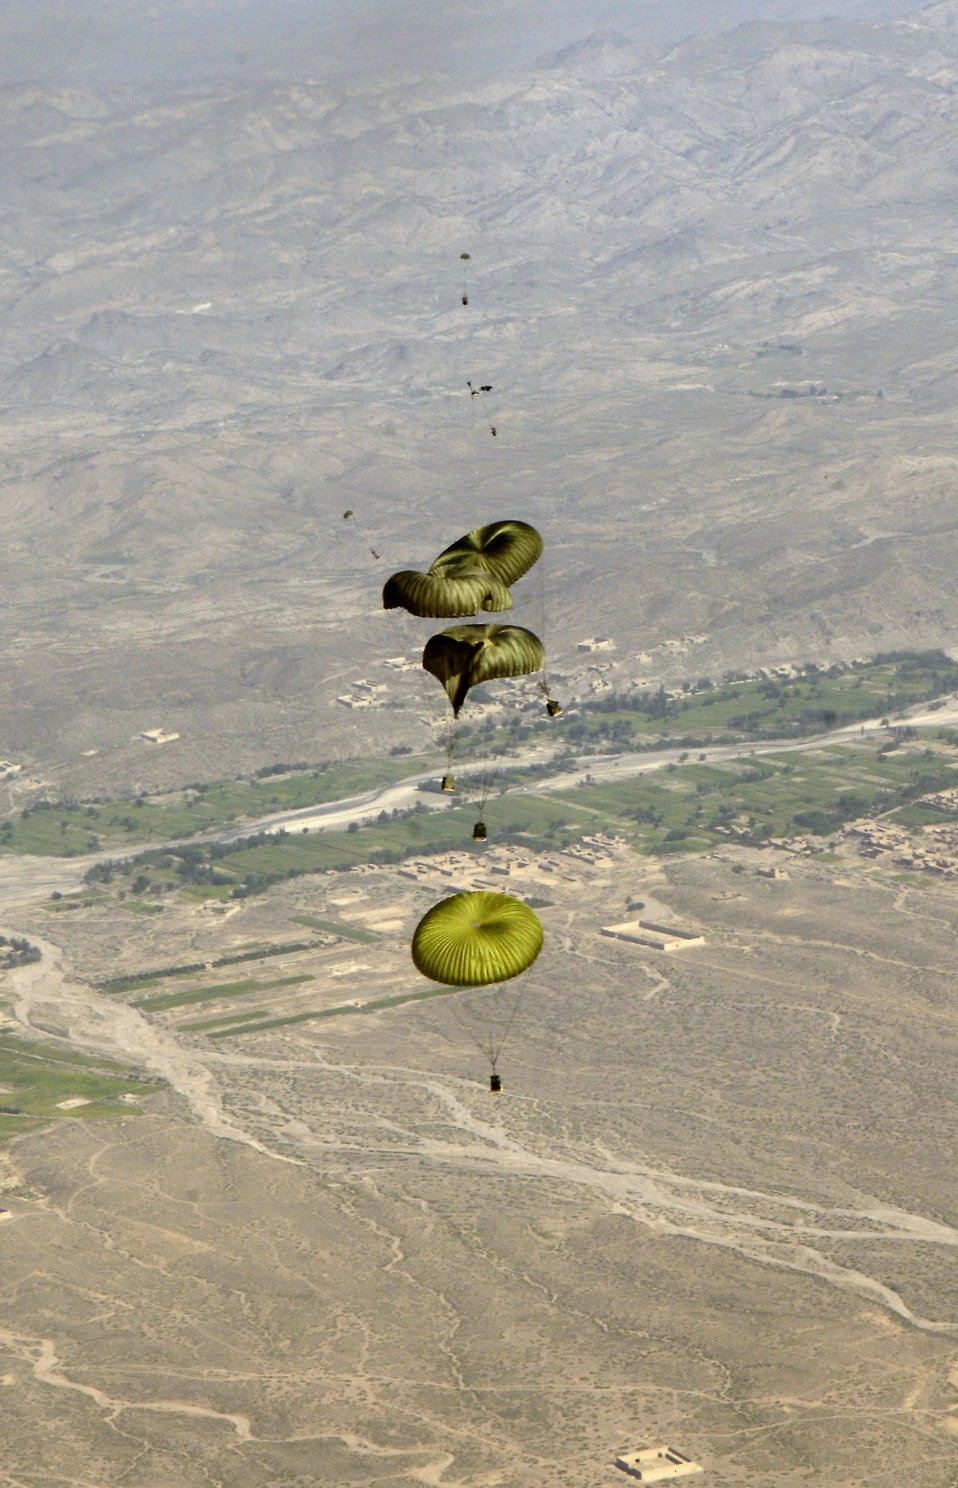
Bagram C-130s drop high-tech cargo delivery system

Joint Precision Air Drop System bundles float to the ground after being dropped from a C-130 Hercules Aug. 26. The drop was made from almost 10,000 feet above sea level and was calculated using up-to-the-minute wind data relayed from two small dropsondes deployed 20 minutes earlier. The dropsondes calculate wind speed and relay the information back to the aircraft, helping to calculate the correct drop point.